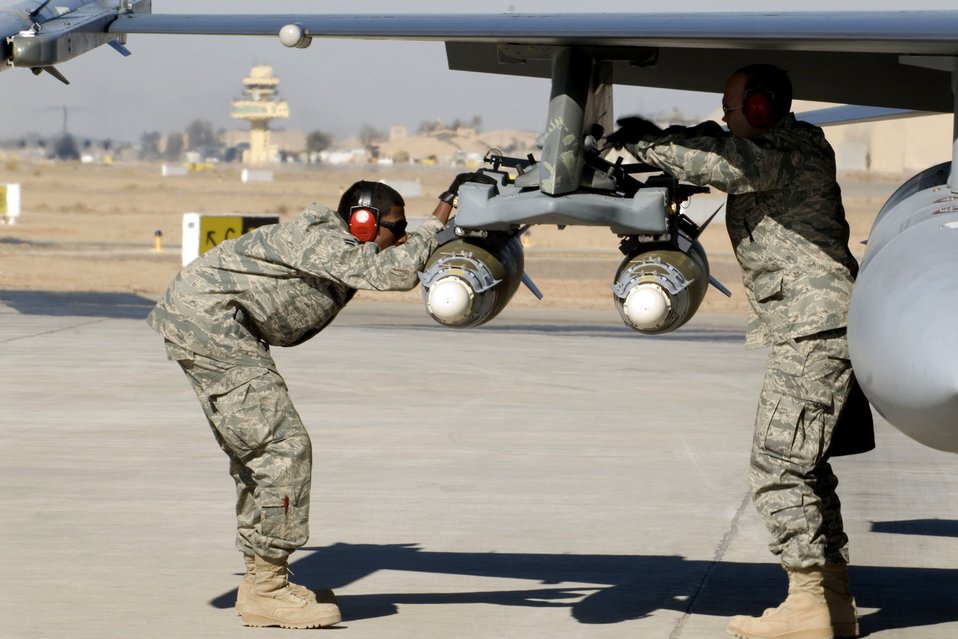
Airmen up in arms

Airman 1st Class Mayuran Arunachalam and Staff Sgt. Michael Norton inspect F-16 Fighting Falcon munitions prior to takeoff Jan. 16 at Balad Air Base, Iraq. Munitions are inspected and armed prior to flights to ensure they are mission capable. Sergeant Norton and Airman Arunachalam, 332nd Expeditionary Maintenance Squadron aircraft armament specialists, are deployed from Hill Air Force Base, Utah.